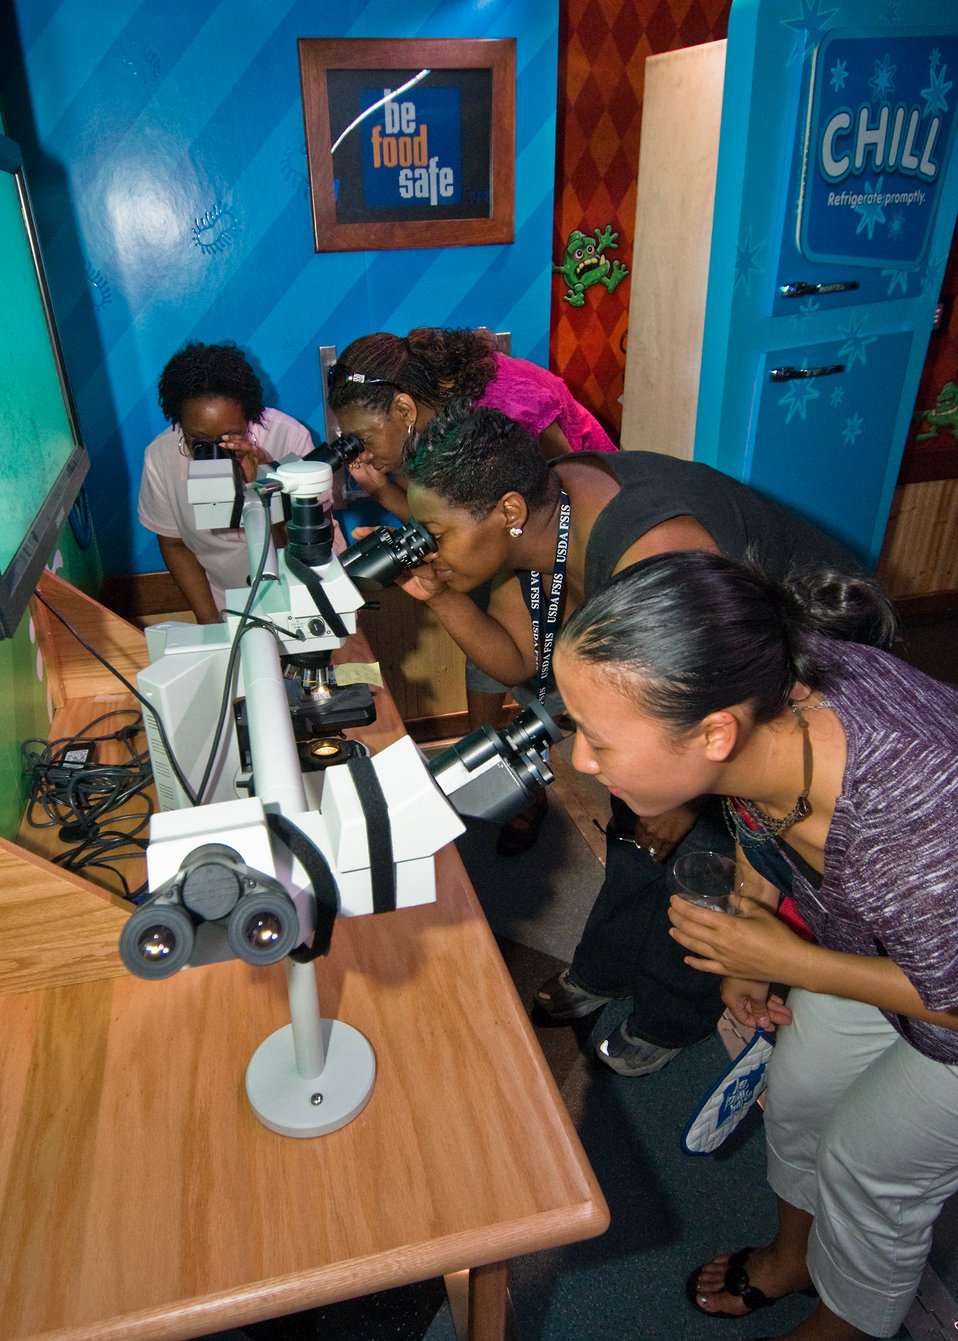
“Be Food Safe.” Food Safety Inspection Service employees view the food borne bacteria shown on the monitor in the United States Department of Agriculture, Food Safety Inspection Service, Food Safety Discovery Zone. “Clean, Separate, Cook and Chill” are the lessons taught by the Food Safety Education Staff in the Food Safety Discovery Zone a mobile education center for that travels to schools and civic functions teaching safe food handling. The Food Safety Discovery Zone was an exhibit during the annual Food Safety Inspection Service “Unity Day” held at the USDA George Washington Carver Center in Beltsville, Maryland Wednesday, May 26. USDA Photo 10di1376-14